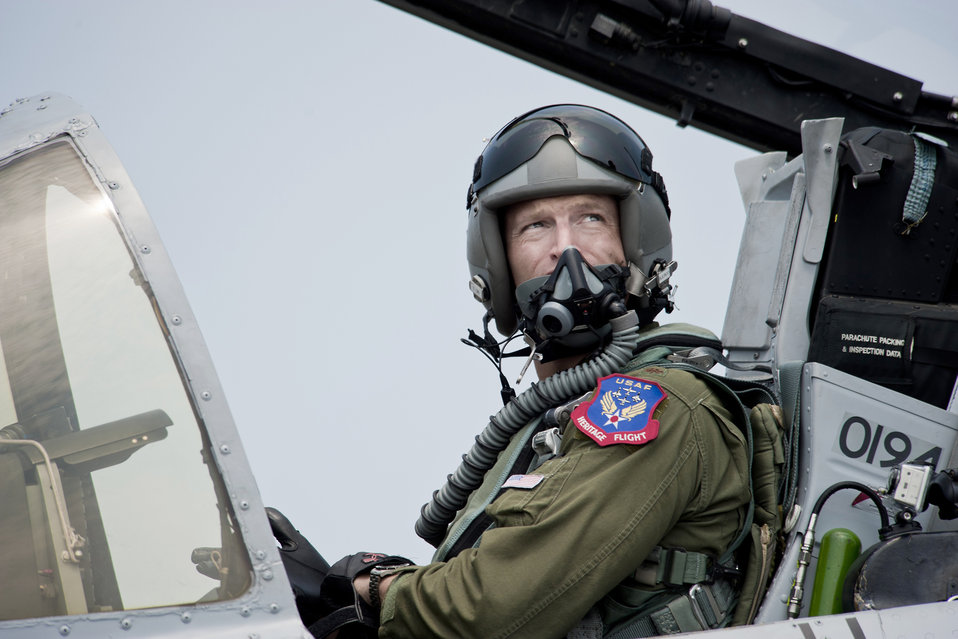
A-10 East Demonstration Team

Maj. Dylan Thorpe prepares for flight May 28, 2011, during an air show at Jones Beach, N.Y. Major Thorpe is an A-10 Thunderbolt II pilot with the A-10 East Demonstration Team.